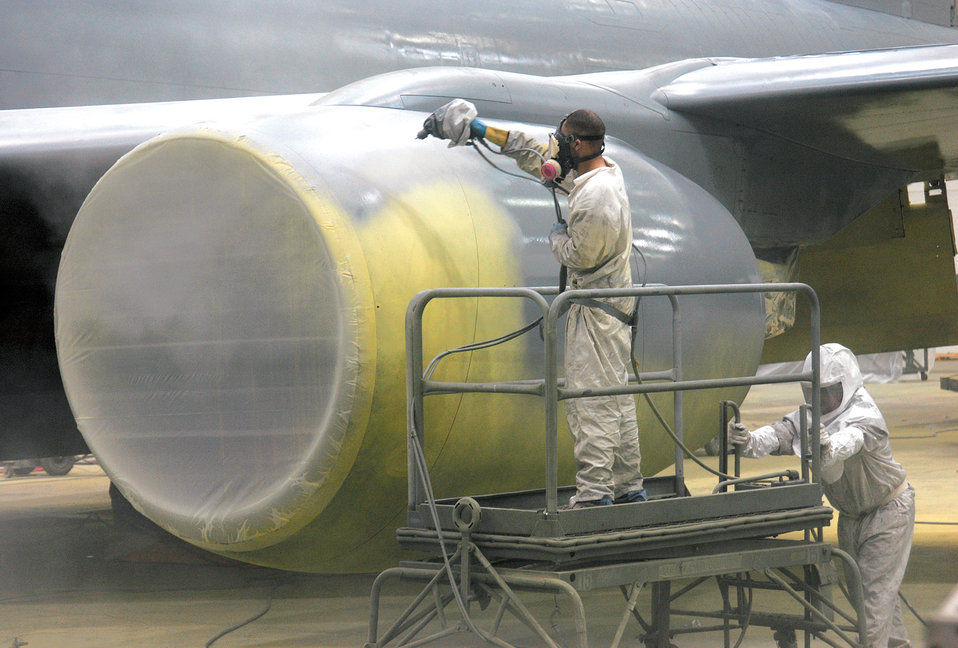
Painters produce picture-perfect planes

TINKER AIR FORCE BASE, Okla. -- Painter Don Watkins puts the first coat on a KC-135 Stratotanker engine cowling here. One coat of primer and two coats of paint add 420 to 500 pounds to the aircraft.